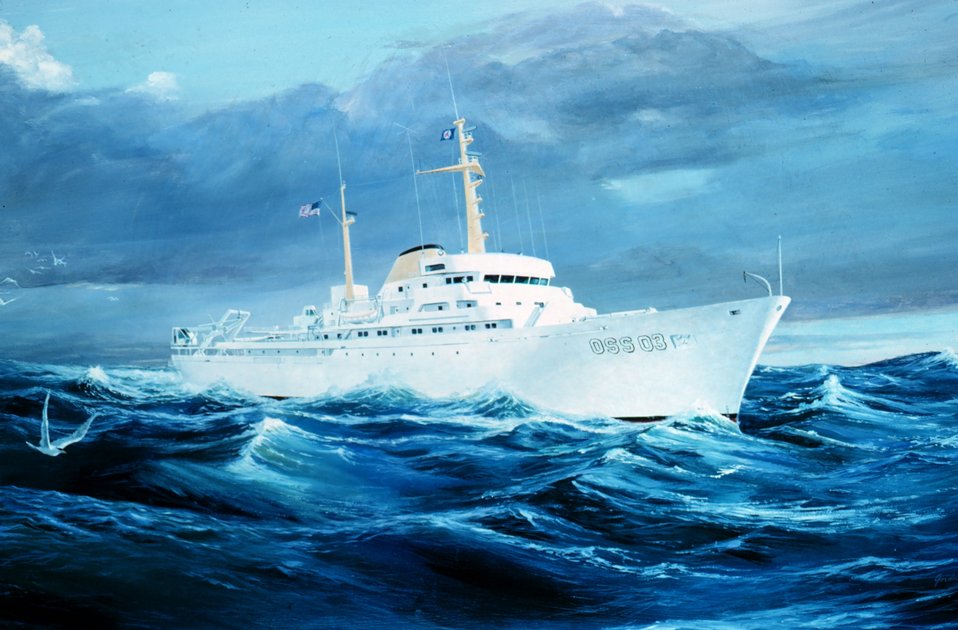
Artist's conception of the NOAA Ship RESEARCHER.